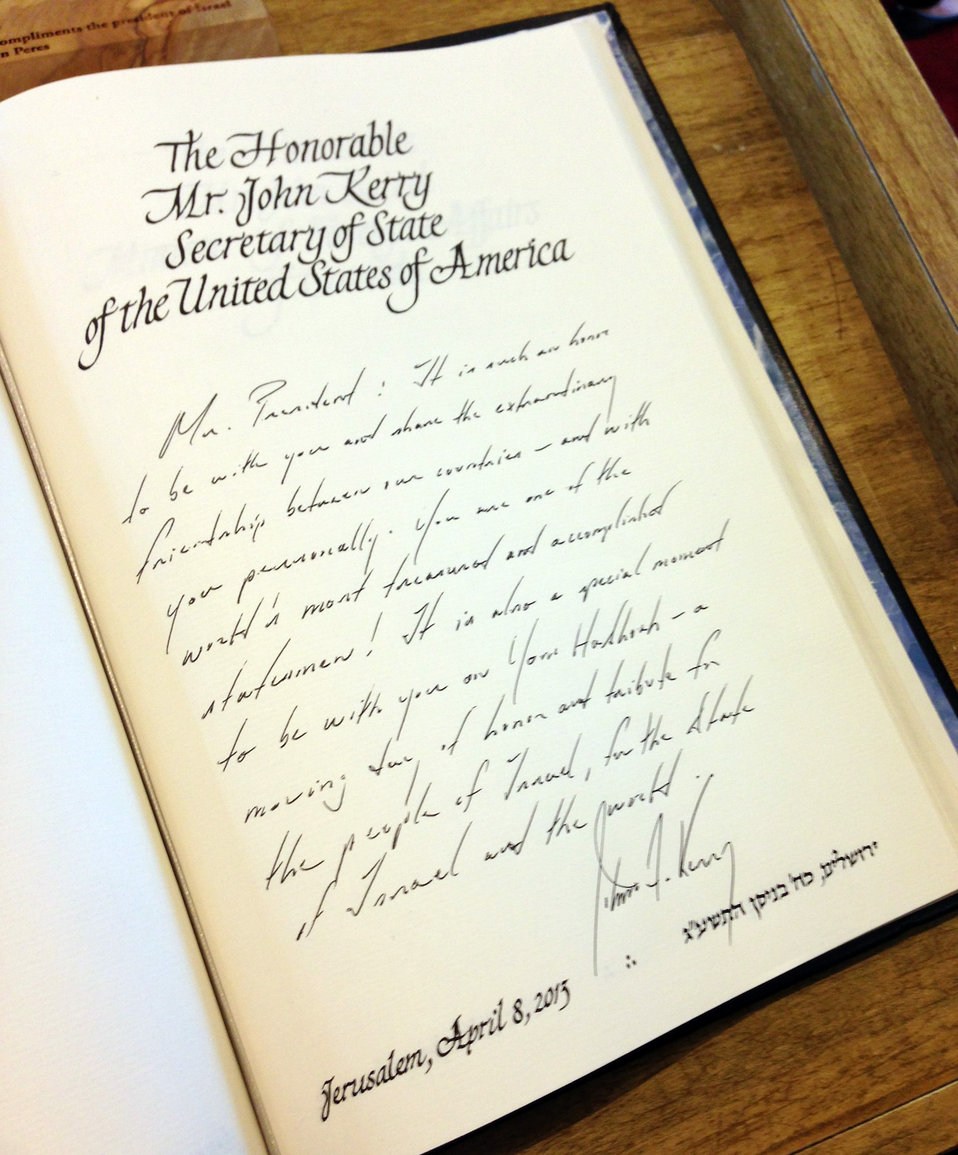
Secretary Kerry's Inscription in Guest Book of Israeli President Peres

U.S. Secretary of State John Kerry's inscription appears in the guest book of Israeli President Shimon Peres; Secretary Kerry signed the book during a visit to the Israeli President's Jerusalem residence, April 8, 2013.